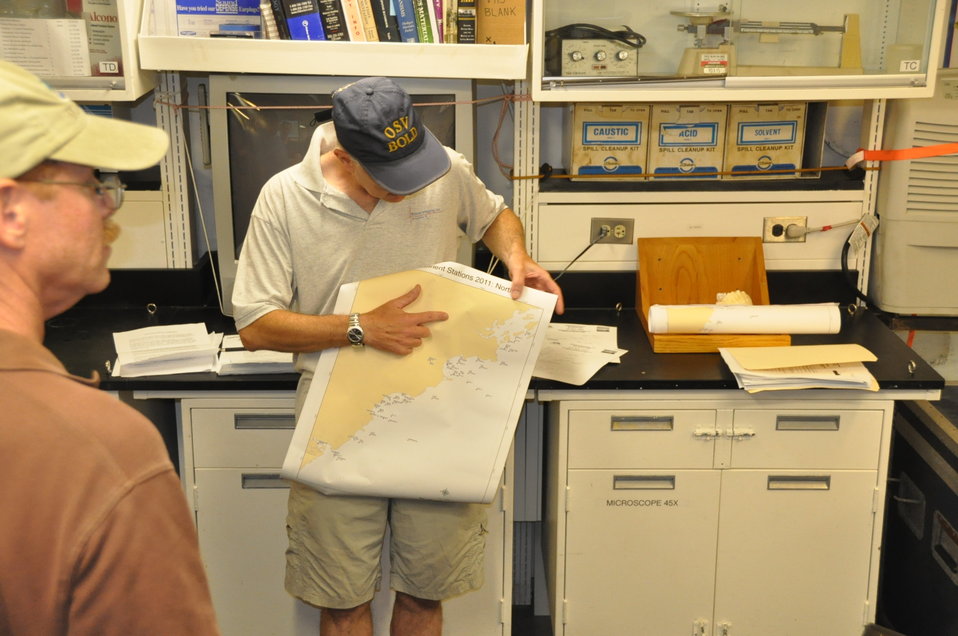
August 5, 2011 Chief Scientist Matt Liebman reviews sampling plan

You can view the same maps at www.epa.gov/boldkids/captainslog.html